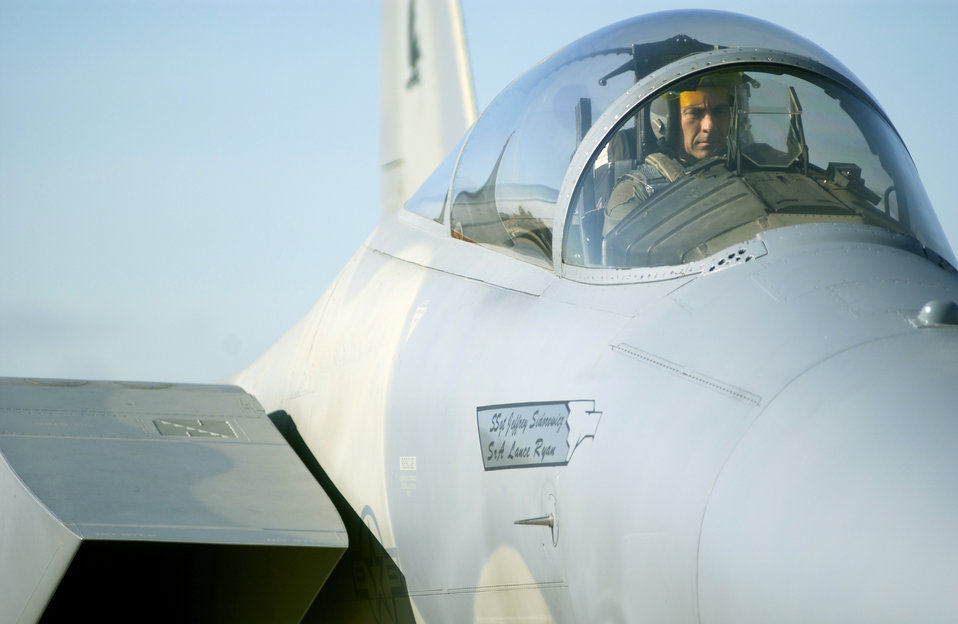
Eagles fly the nest

LANGLEY AIR FORCE BASE, Va. -- Lt. Col. Stuart Nichols prepares to fly an F-15 Eagle's final mission in the 27th Fighter Squadron. After Oct. 1, the unit will officially begin the migration to become the first operational F/A-22 Raptor squadron by mid-2005. Colonel Nichols is the squadron's commander.